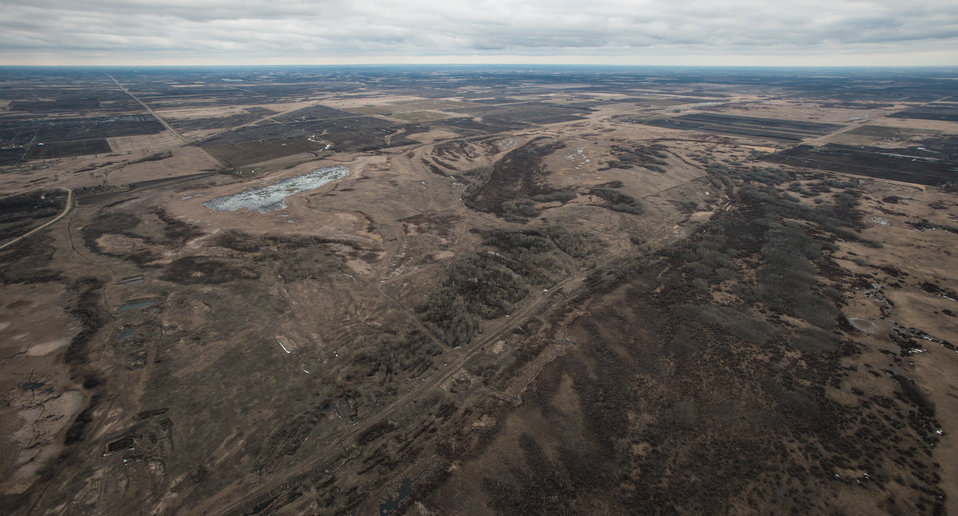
Burnham Creek Dam adjacent to the Department of the Interior (DOI) Glacial Ridge National Wildlife Refuge with U.S. Department of Agriculture (USDA) Wetland Reserve Program and Public Law PL83-566 Small Watershed Program participants’ land in Polk County, MN, on Tuesday, April 30, 2013. USDA Photo by Lance Cheung.

For information please see:

USDA Red River Basin Initiative (RRBI) www.mn.nrcs.usda.gov/news/features13/RRBI.html
Wetlands Reserve Program www.nrcs.usda.gov/wps/portal/nrcs/main/national/programs/...
Public Law PL83-566 (PL-566) Small Watershed Program www.nrcs.usda.gov/wps/portal/nrcs/detail/nd/technical/?ci...